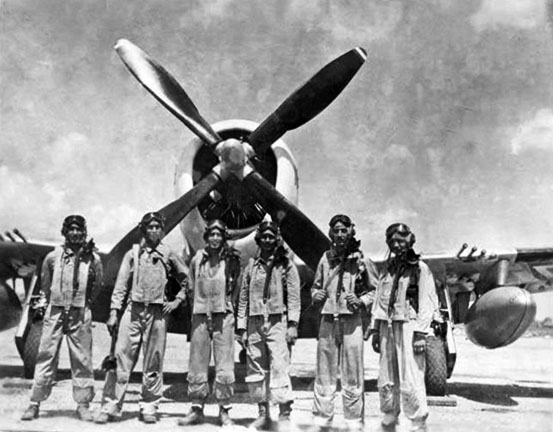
Museum remembers 'Aztec Eagles'

Mexican air force Escuadron 201 pilots stand in front of an aircraft prior to flying a combat mission in the Philippines. Members of the Escuadron 201 fought alongside U.S. forces during World War II.